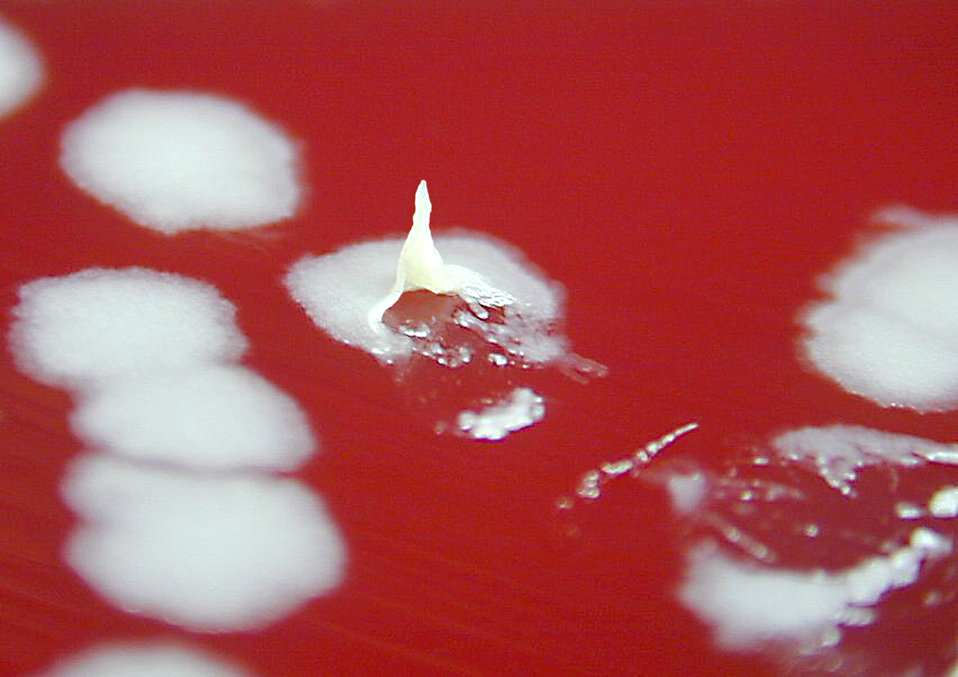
Bacillus anthracis tenacity positive on sheep blood agar.